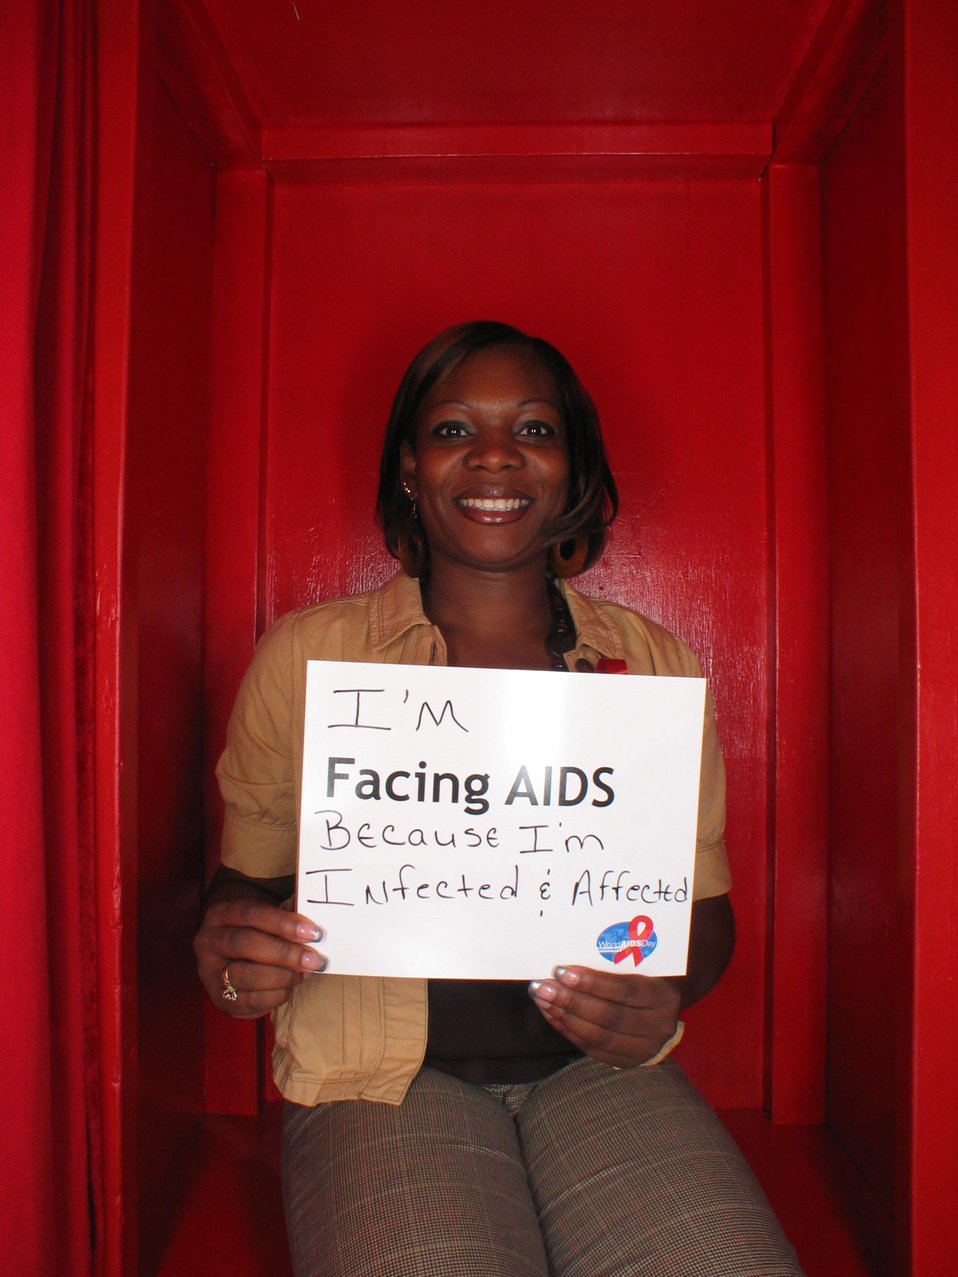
I'm Facing AIDS because I am infected and affected.